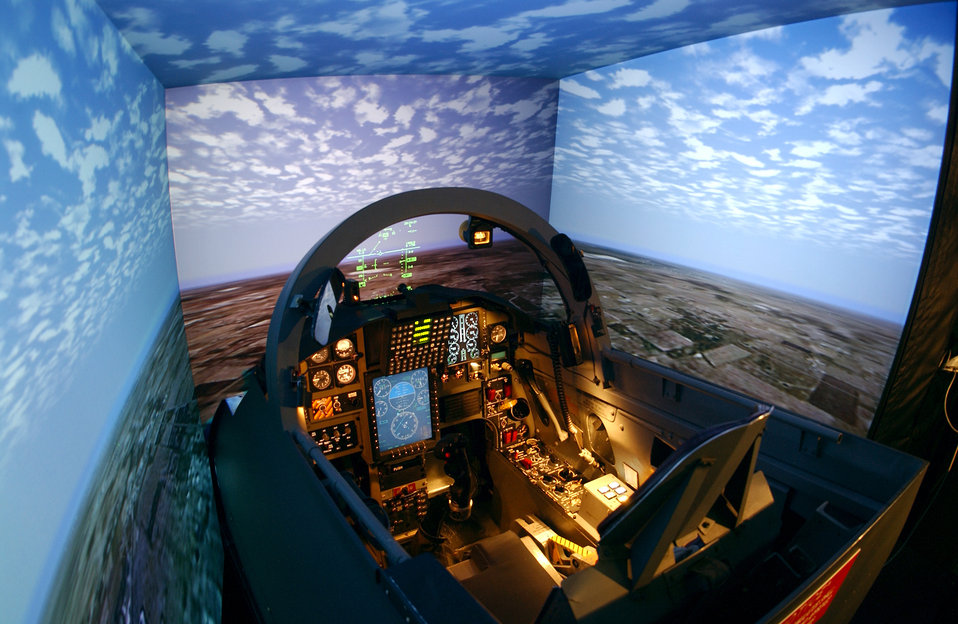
Virtual reality training

RANDOLPH AIR FORCE BASE, Texas -- The T-38C Talon trainer's